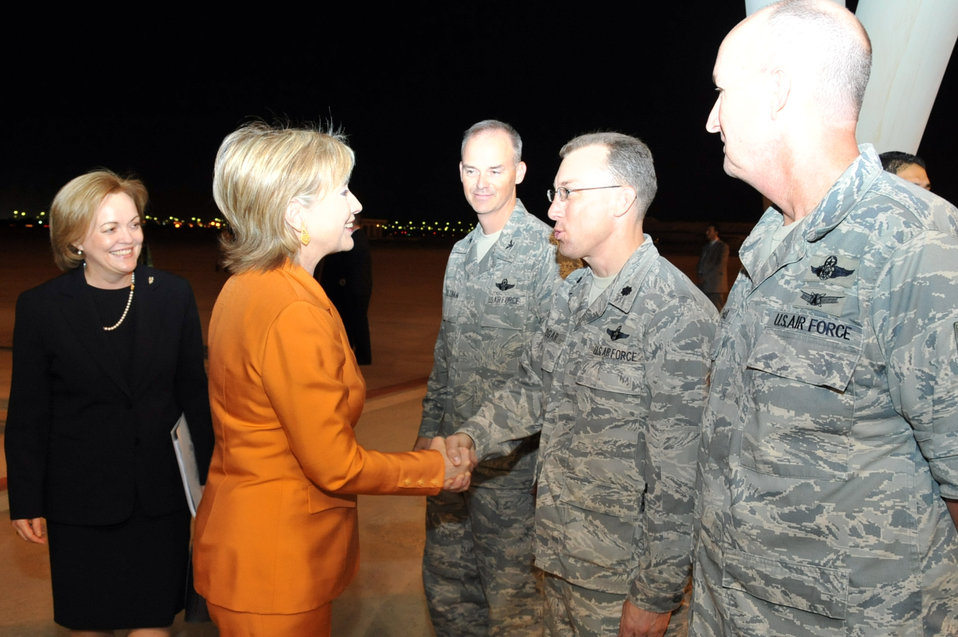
Secretary Clinton Arrives in Kuwait

U.S. Secretary of State Hillary Rodham Clinton greets members of the Office of Military Cooperation - Kuwait as she arrives in Kuwait to a welcome from U.S. Ambassador to Kuwait Deborah K. Jones (left) in Kuwait City, Kuwait April 24, 2009.